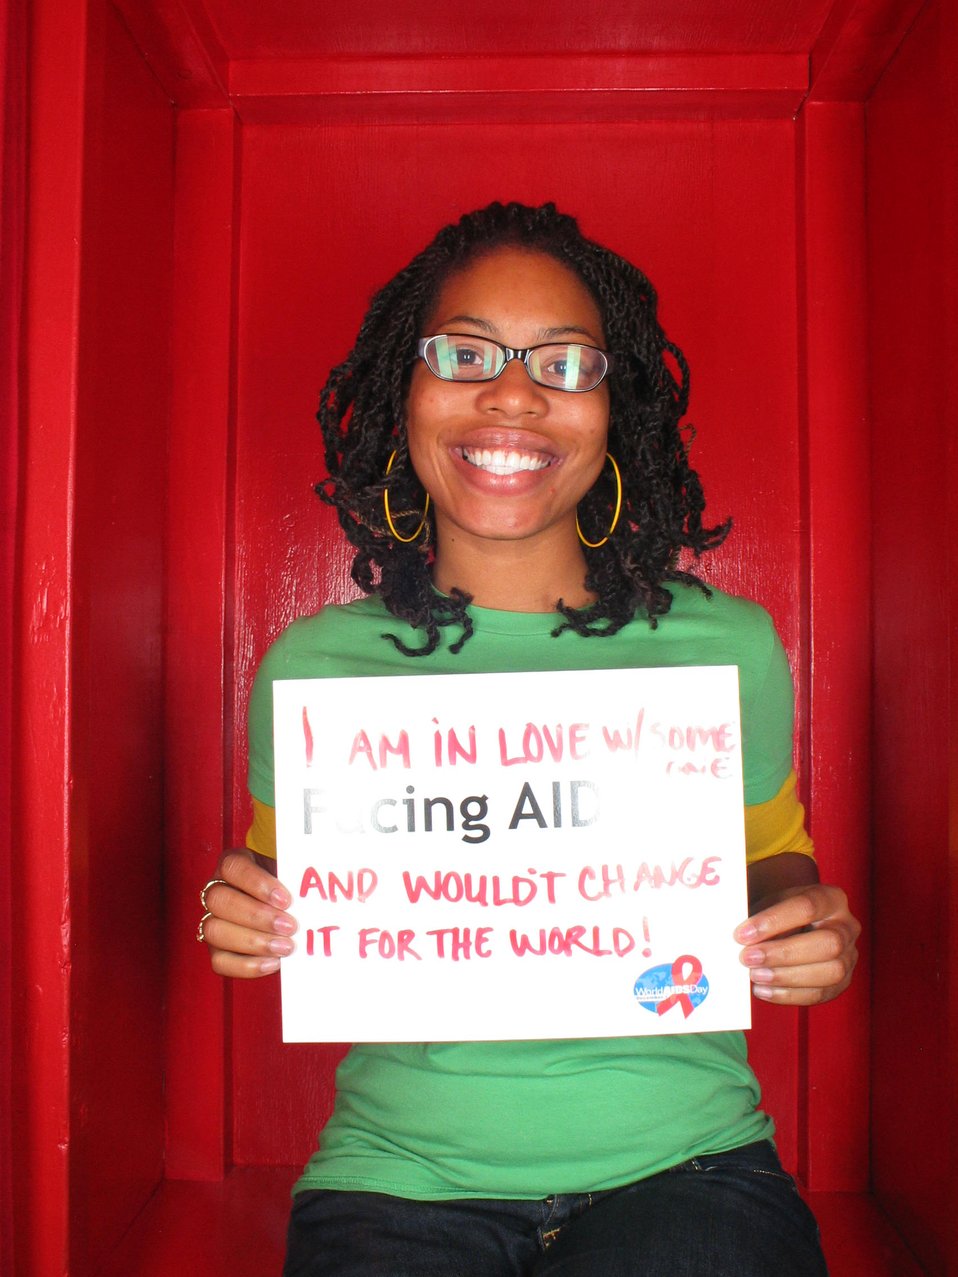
I am in love with someone Facing AIDS and I wouldn't change it for the world!